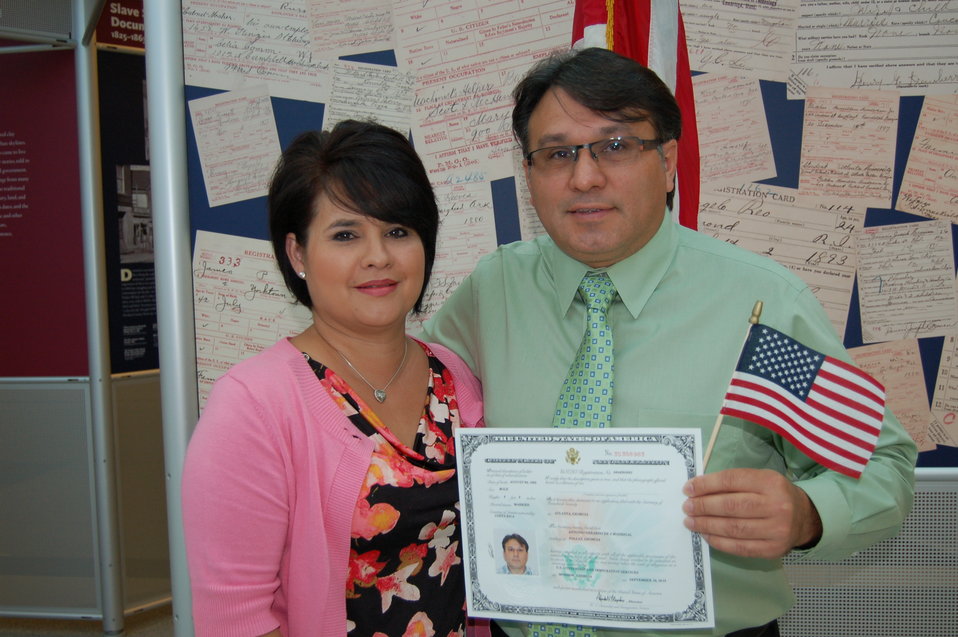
New Citizens